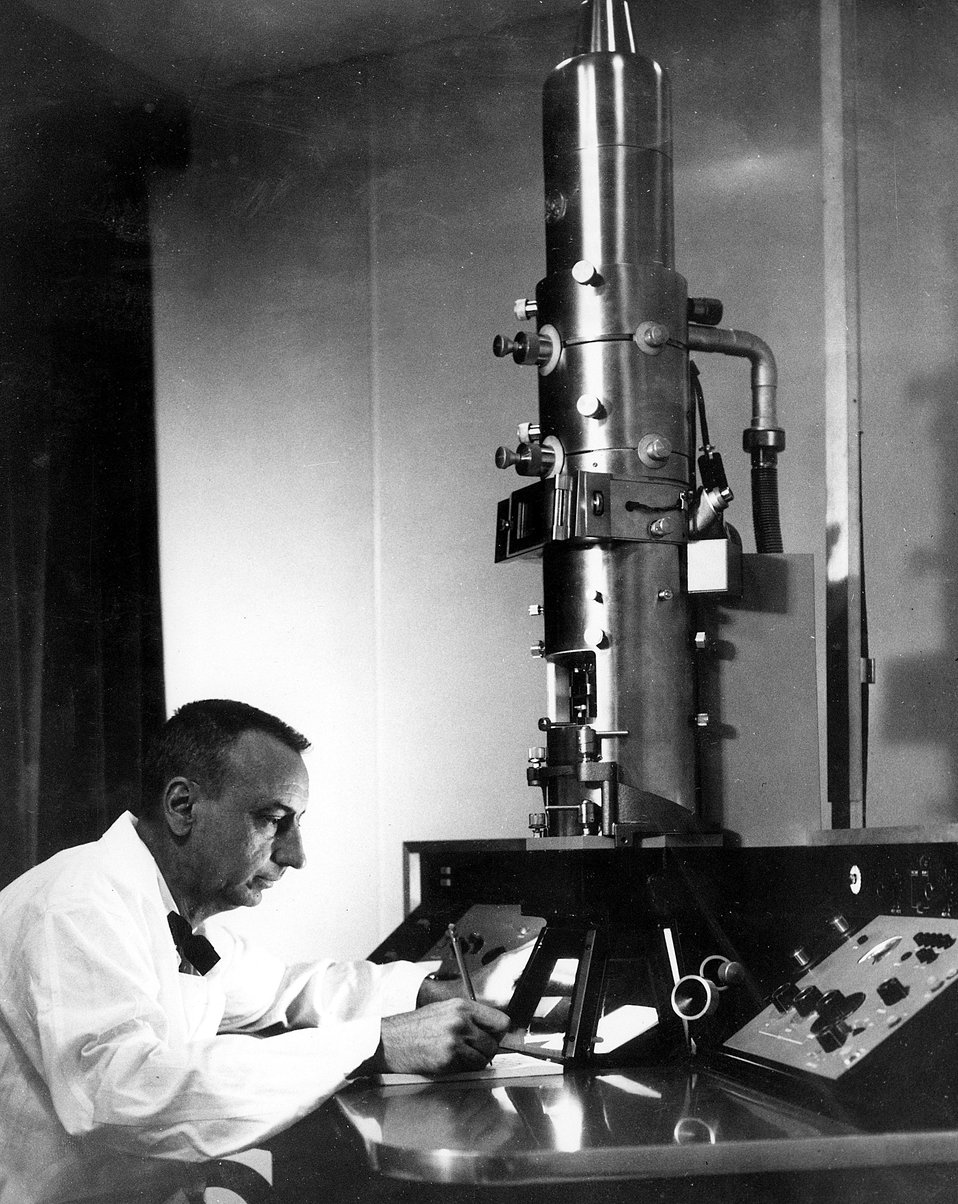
The electron microscope, which can magnify up to 200,000 times, is used by the Oak Ridge Y-12 Plant to study the microstructure of metals, ceramics, and other materials to improve their qualities. The studies are carried out as part of Y-12's research and development of materials used in the nation's space and defense programs. Circa 1966.